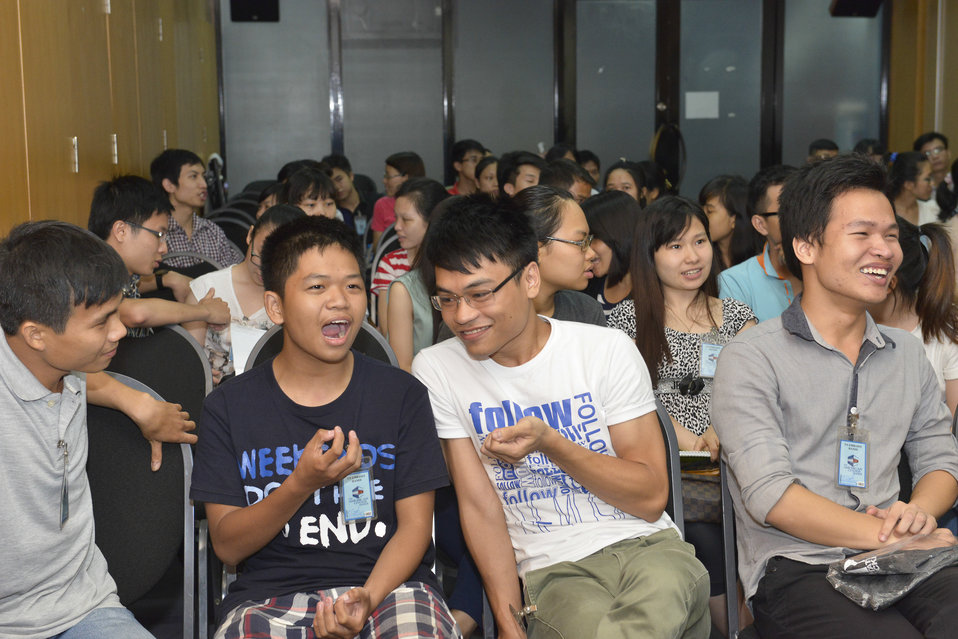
MTV Exit Talk to Engage Students in the Fight against Human Trafficking

Hanoi. June 5, 2014.